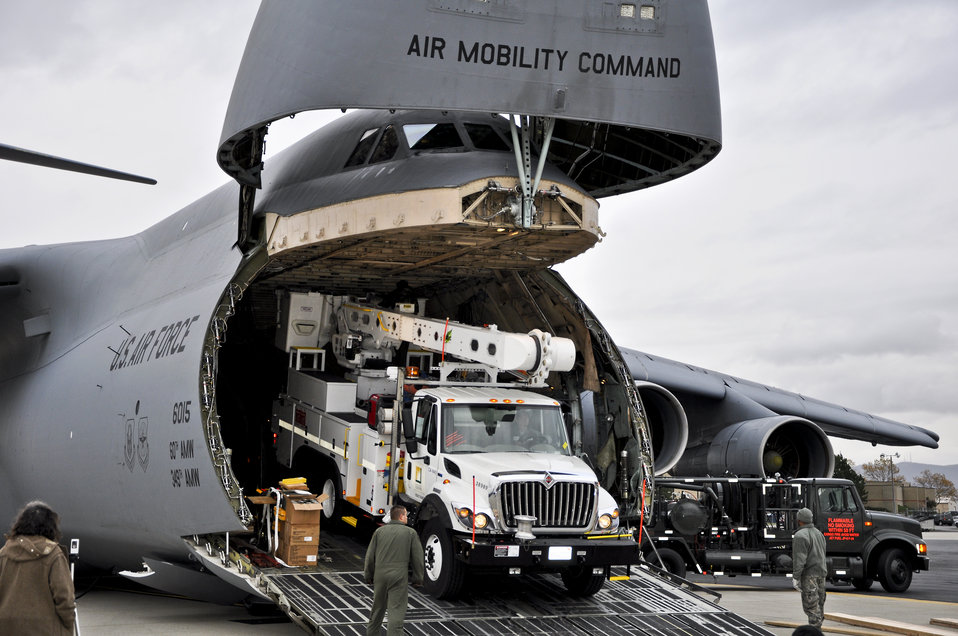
Hurricane Sandy Relief

The Defense Department launched “a significant airlift event” to quickly get equipment to restore power to New York, Pentagon Press Secretary George Little said, Nov. 1, 2012. Air Force crews from the Air Mobility Command transported the equipment from Southern California to New York in Hurricane Sandy's aftermath.